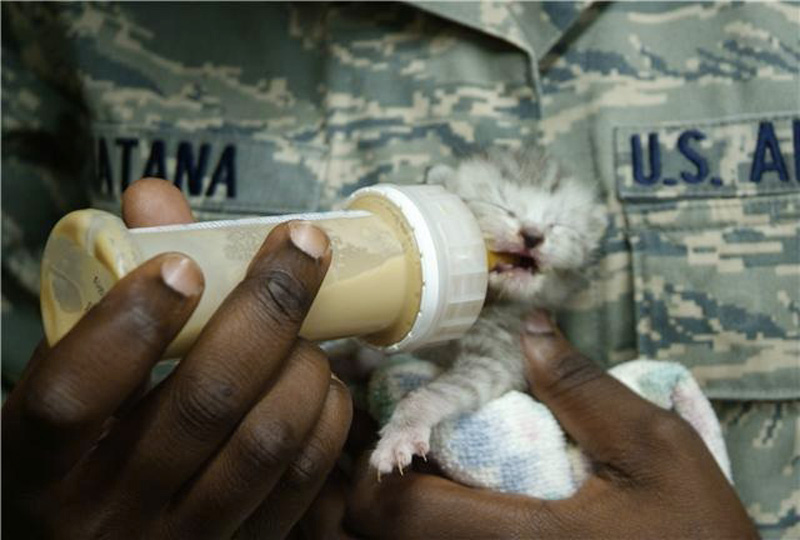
Airmen rescue kittens inside wall

Airman 1st Class Nadia Katana bottle-feeds a kitten that was cut out of a wall June 22 at Hurlburt Field, Fla. Members of the 505th Command and Control Wing cared for the litter of four until they were turned over June 23 to a wildlife refuge until they can be adopted.